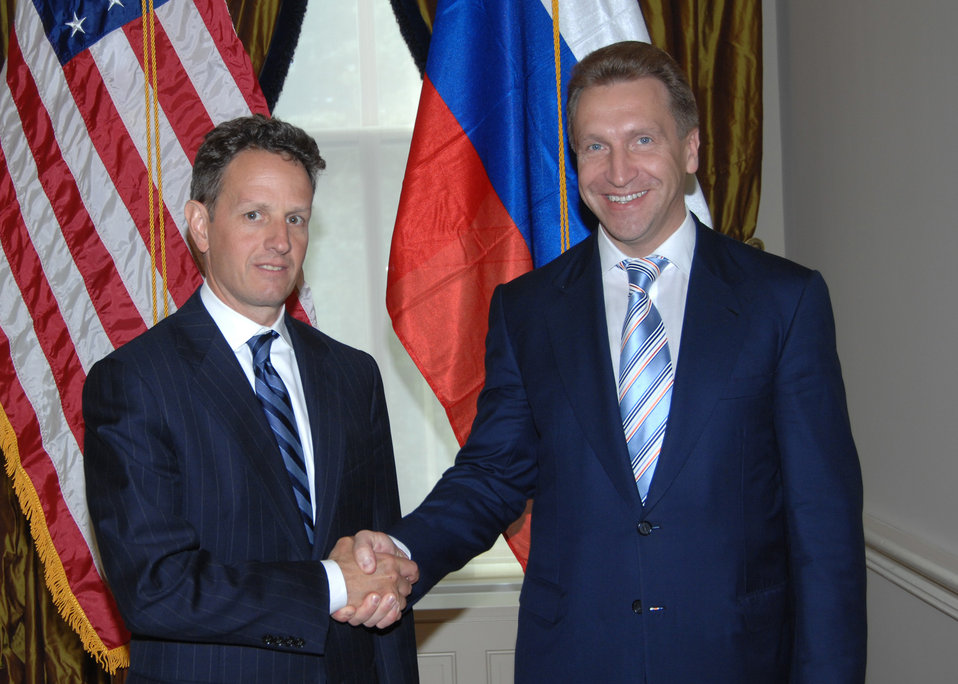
First Deputy Prime Minister Igor Ivanovich Shuvalov of the Russian Federation

On September 21, 2009, Secretary Geithner met with First Deputy Prime Minister Igor Ivanovich Shuvalov of the Russian Federation.